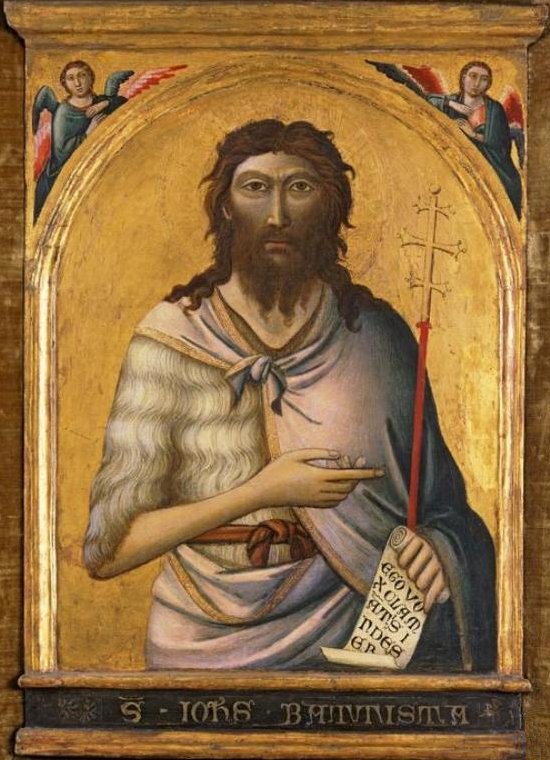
'St. John the Baptist', painting by Jacopo del Casentino and assistant, c. 1330, El Paso Museum of Art